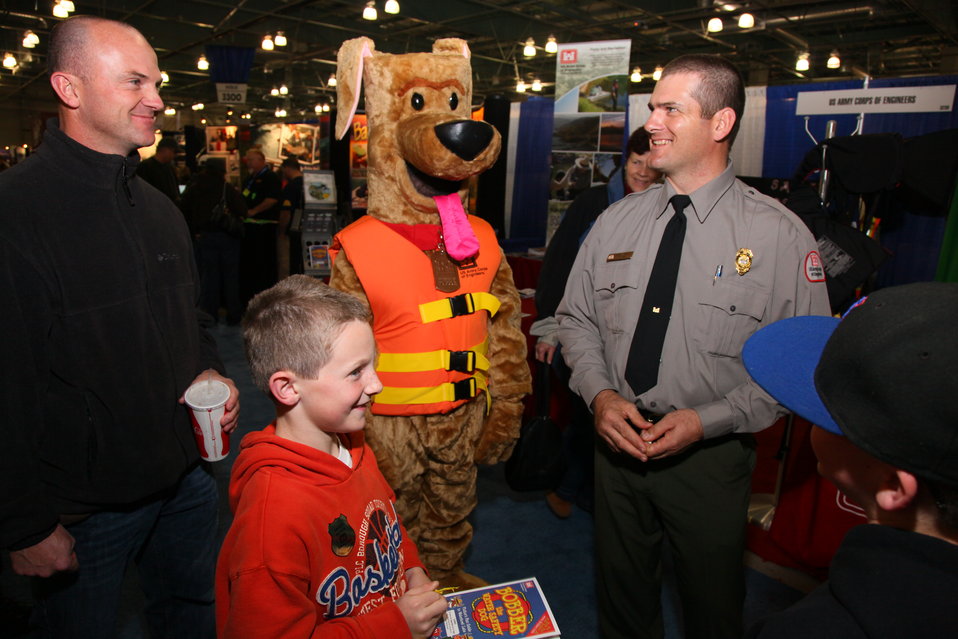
Corps park rangers promote water safety at the 2012 Sportsmen’s Expo

U.S. Army Corps of Engineers park ranger Wayne Shull (right) along with Corps water safety mascot Bobber the Water Safety Dog talk about water safety with visitors to the International Sportsmen’s Exposition in Sacramento, Calif., Jan. 20, 2012. Corps park rangers were on hand at the event to present and promote water safety tips and recreation opportunities at Corps parks.